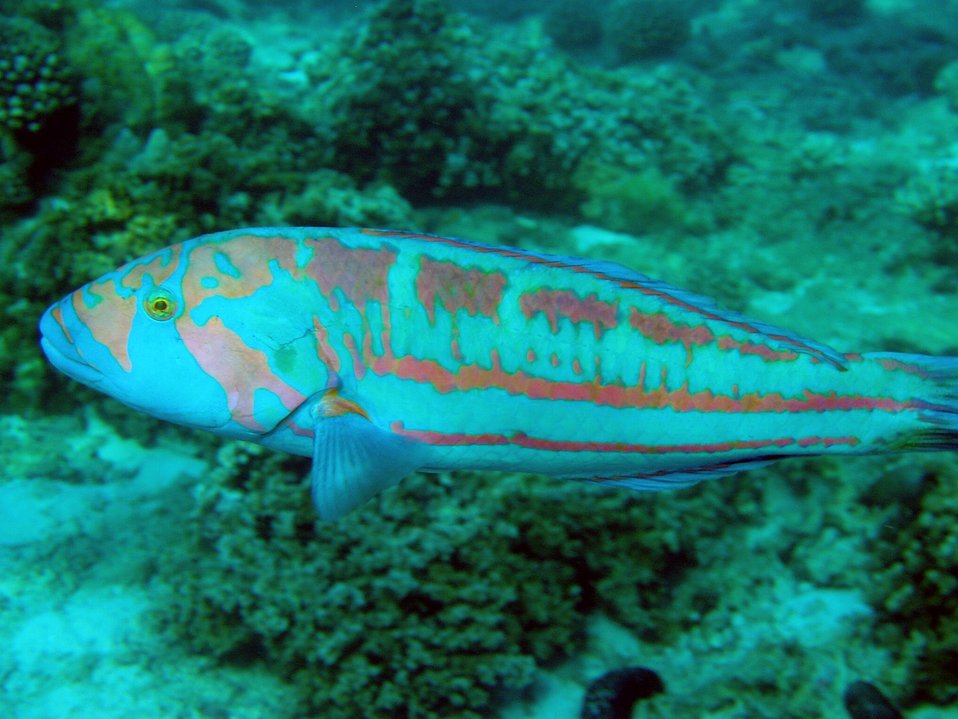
A crazy surge wrasse (Thalassoma purpureum).